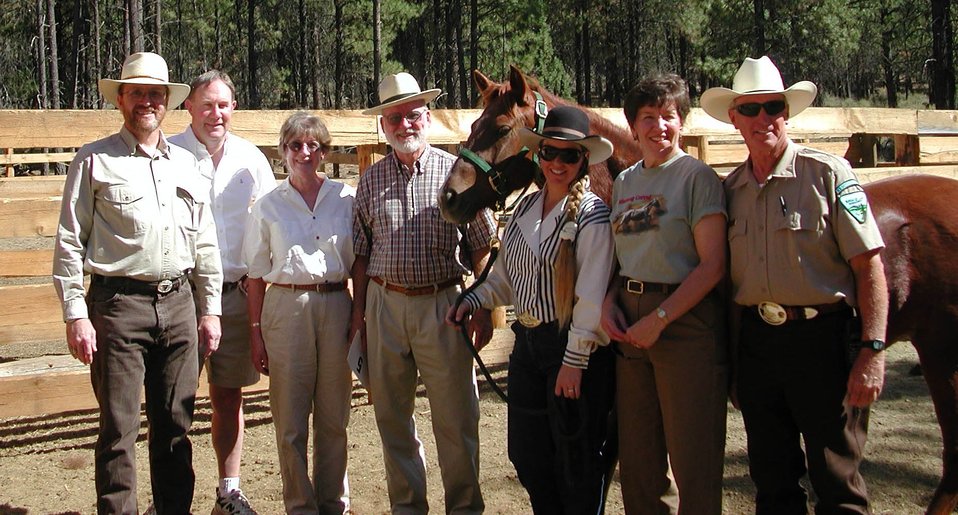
Left to Right: Barron Bail Prineville DM, Forrest Rodgers Museum President, Beth and Gib Carter adopters, Kitty Lauman trainer, Elaine Brong BLM State Director, and Bill Pieratt BLM Range Specialist.